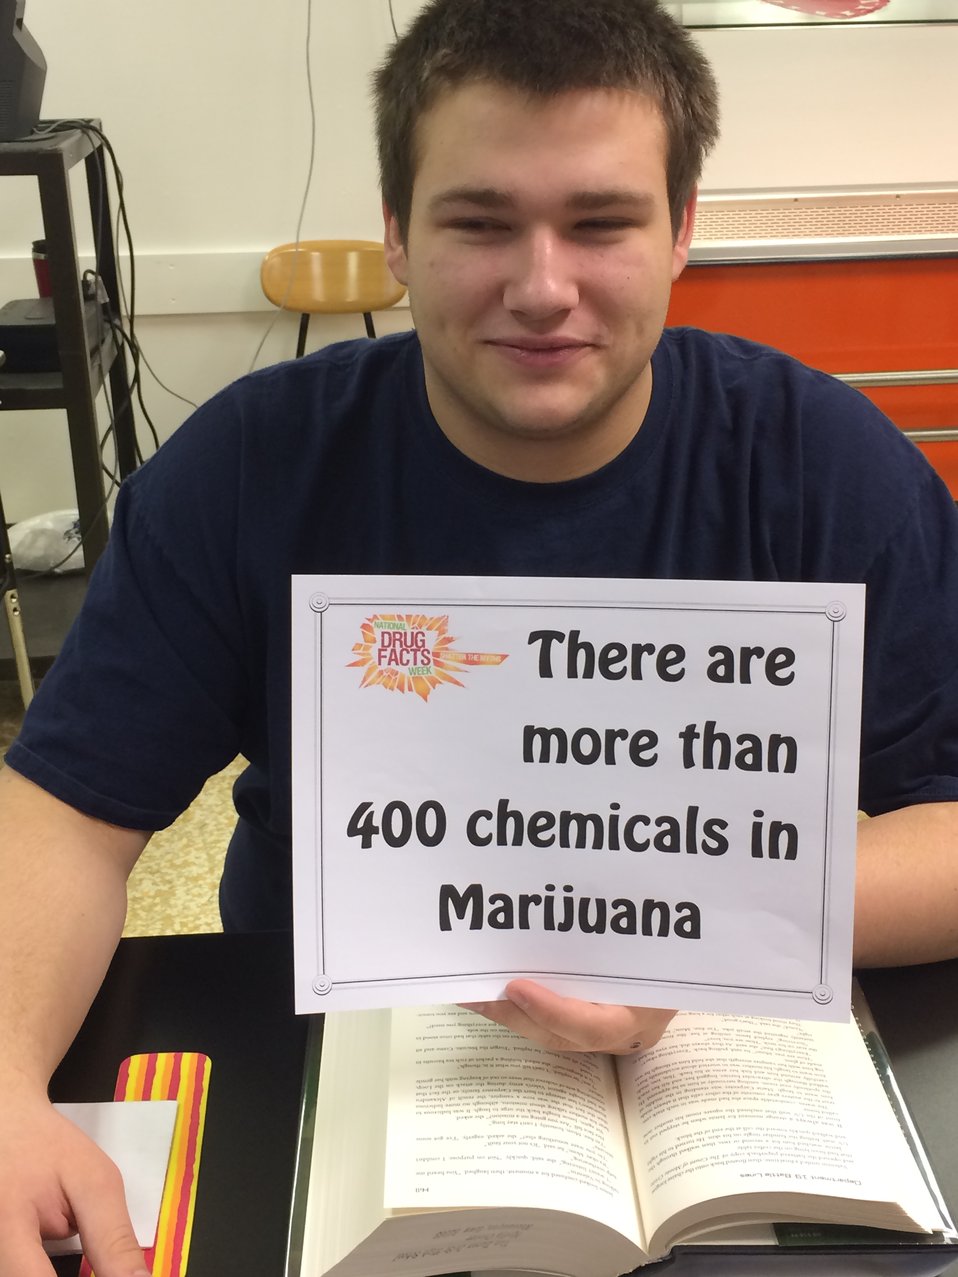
Just the Facts: NDFW 2014

Teenagers from the Van Buren County SAFE Coalition's, Youth Leadership Council (YLC) in Keosauqua, Iowa participate in various events during National Drug Facts Week, 2014.